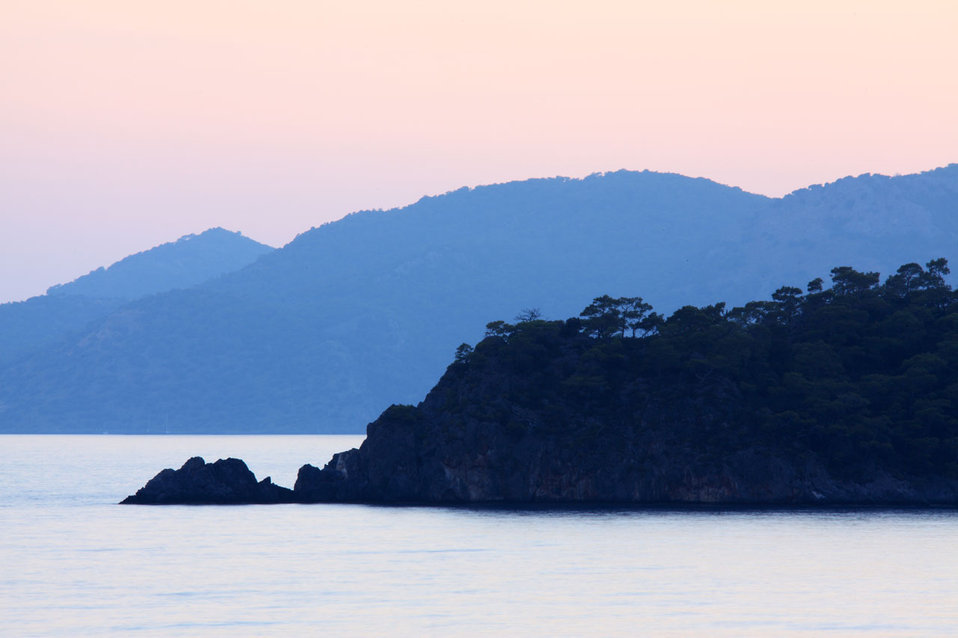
Islands at sunset

Several islands in various distance at sunset in turkey.